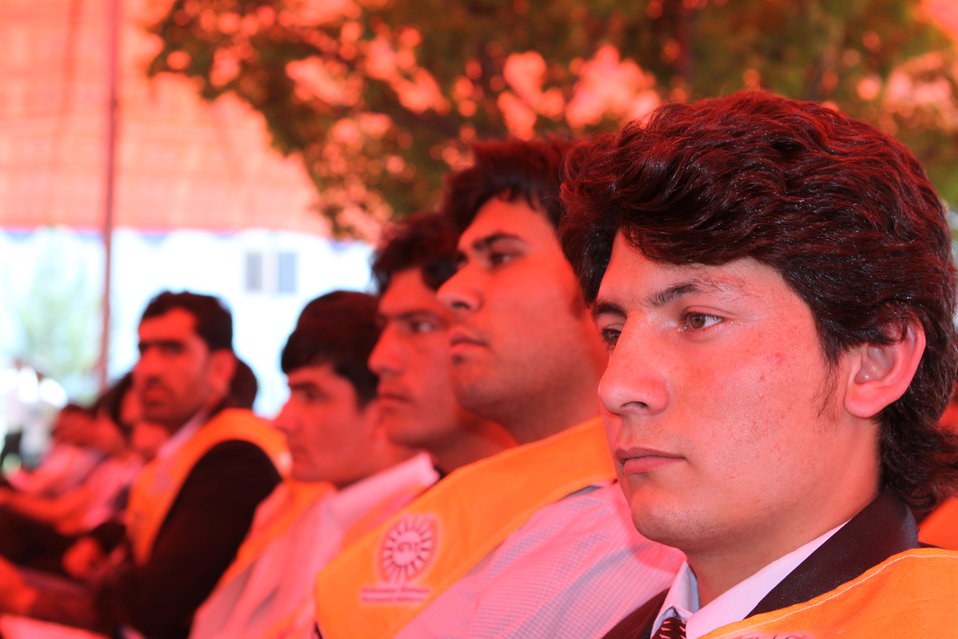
100522 ATVI Graduation 045